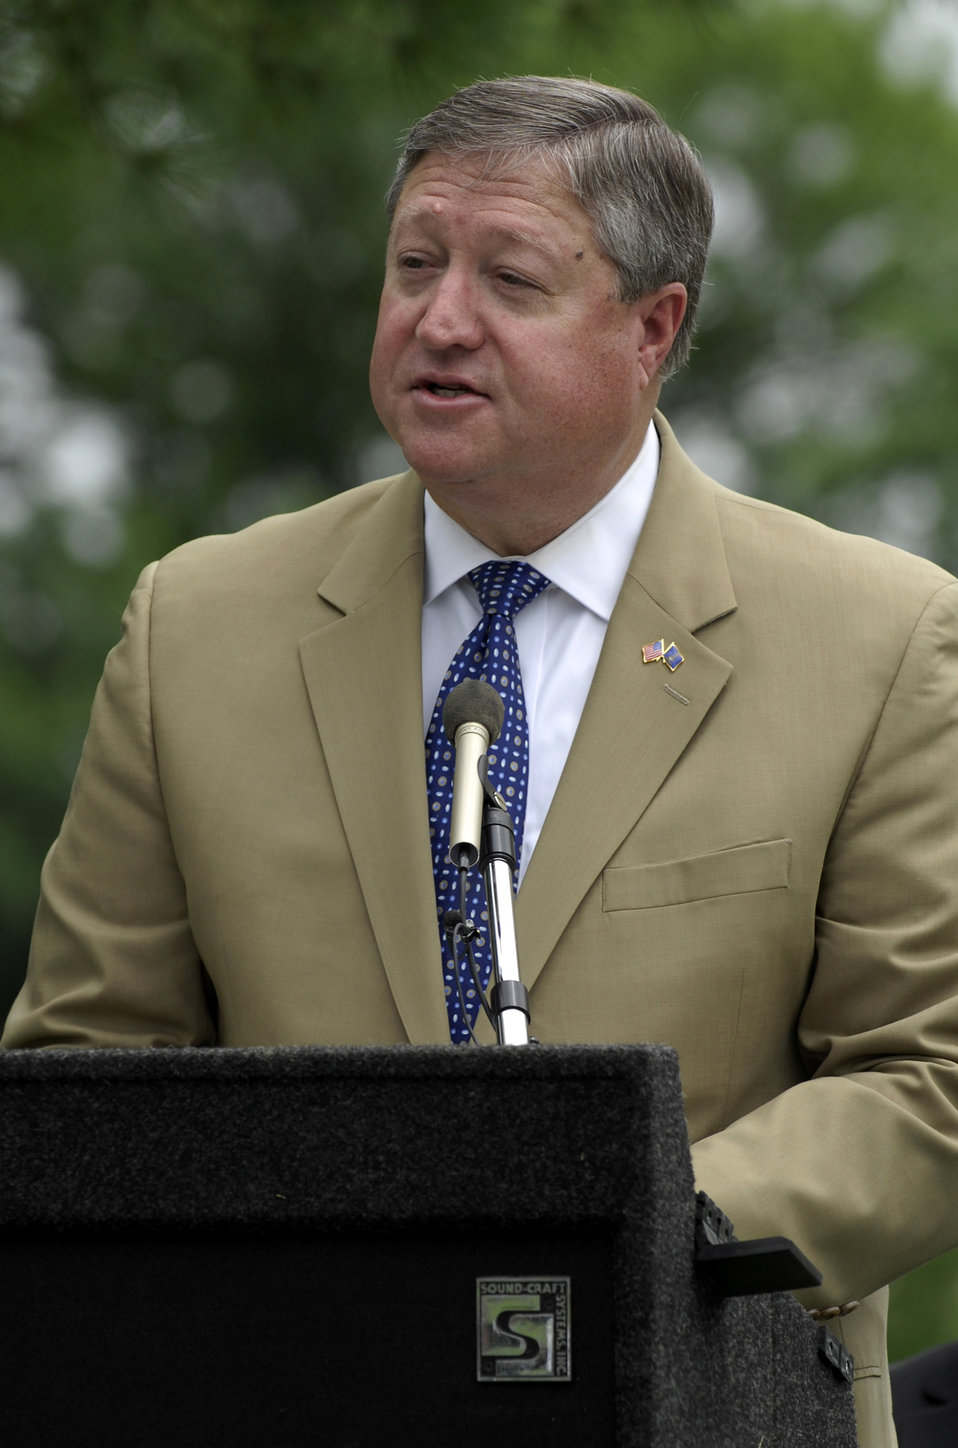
Remembrance

Secretary of the Air Force Michael Donley speaks at a remembrance ceremony, June 25, 2011, at Arlington National Cemetery, Va., to mark the 15th anniversary since the Khobar Towers bombing. Nineteen Airmen were killed in the terrorist bombing, June 25, 1996, at Dhahran Air Base, Saudi Arabia.